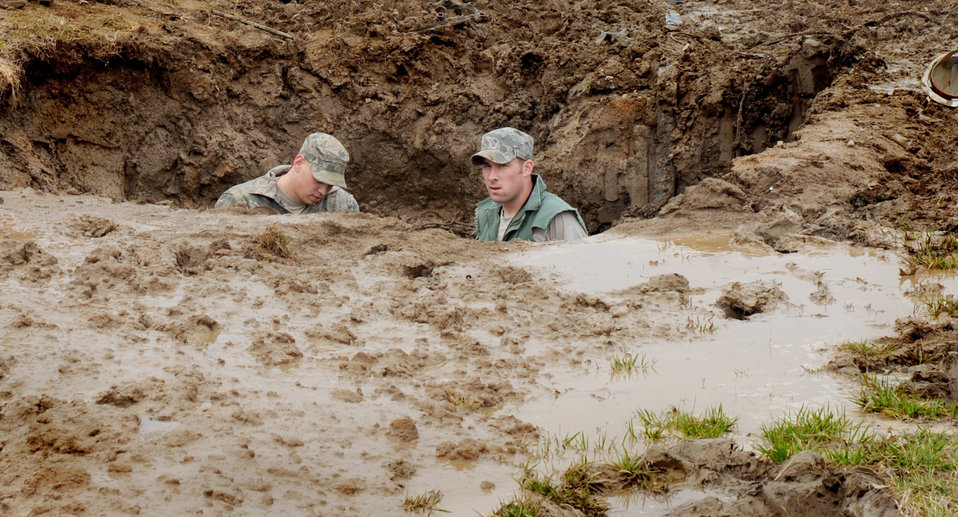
Maintenance specialists

Airmen from the 509th Civil Engineer Squadron make their way into a deep mud pit in order to repair a broken water main March 7, 2011, at Whiteman Air Force Base, Mo.